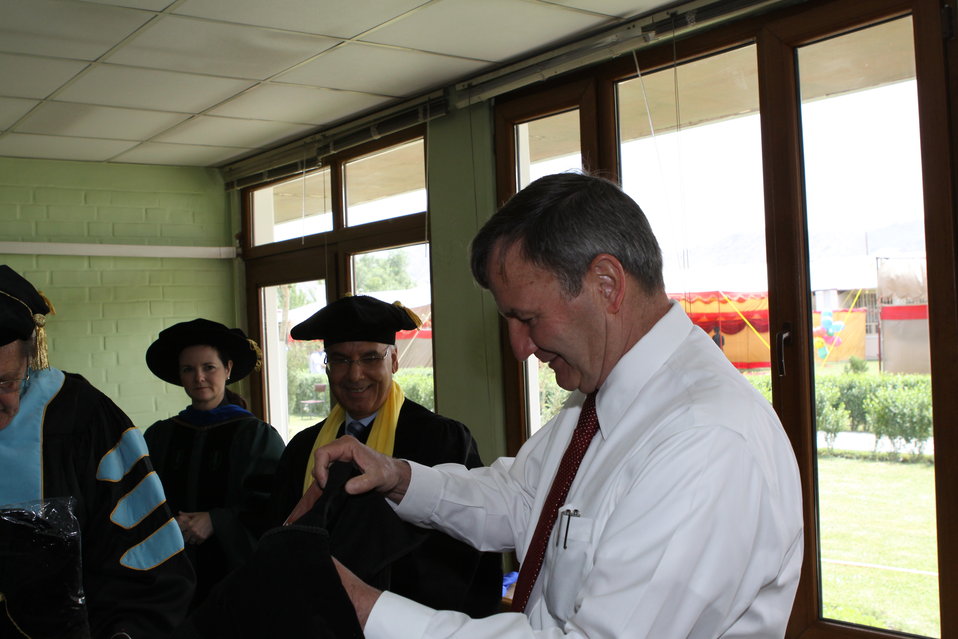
100526 AUAF Graduation 042